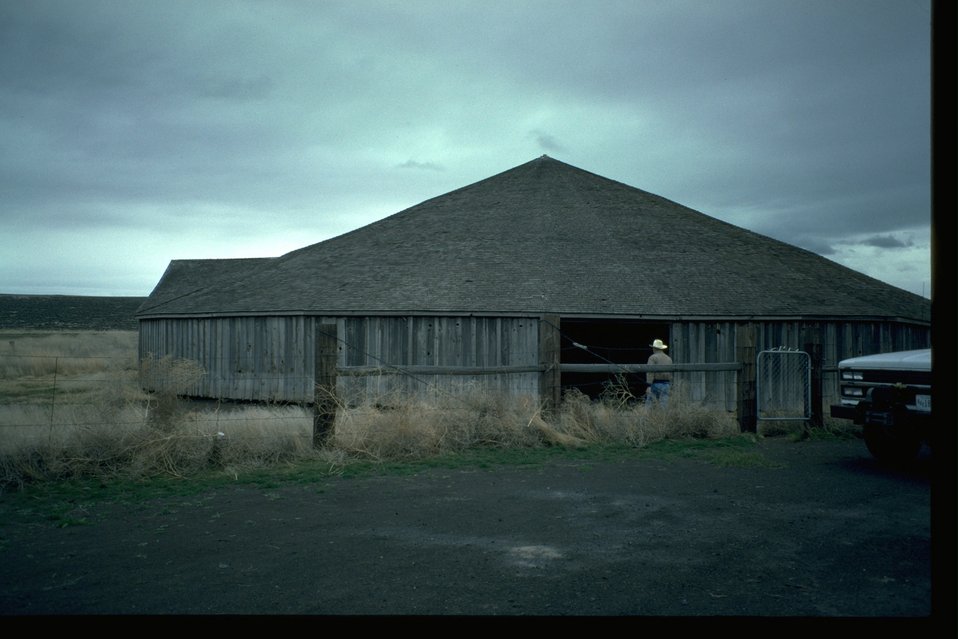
Peter French's historic Round Barn.